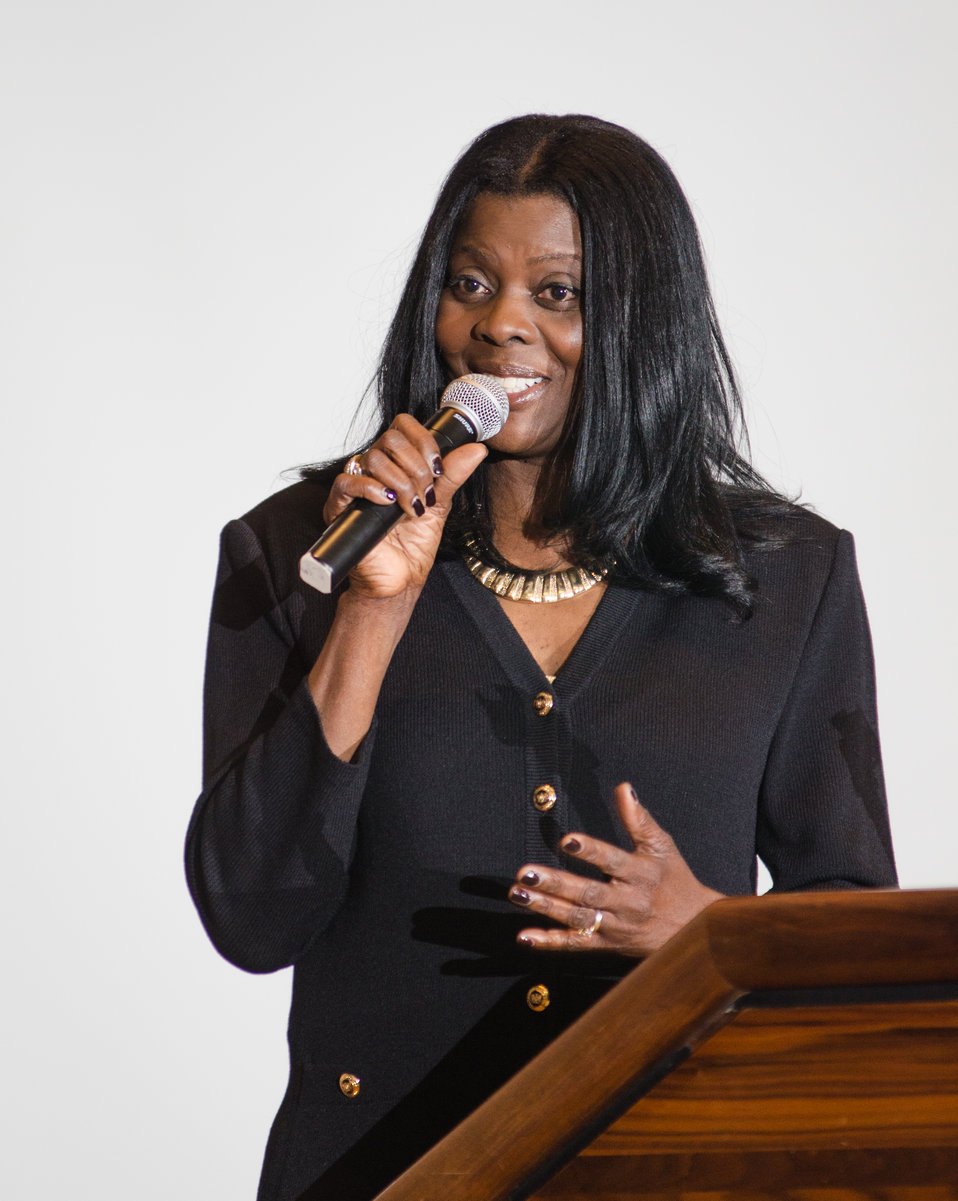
U.S. Department of Agriculture (USDA) Agriculture Research Service (ARS) National Programs Associate Administrator Dr. Chavonda Jacobs-Young, provides closing remarks for the 2013 Women’s History Month Observance event, “Women Inspiring Innovation Through Imagination: Celebrating Women in Science, Technology, Engineering, and Mathematics, Thursday, March 21, 2013, in Washington, D.C.